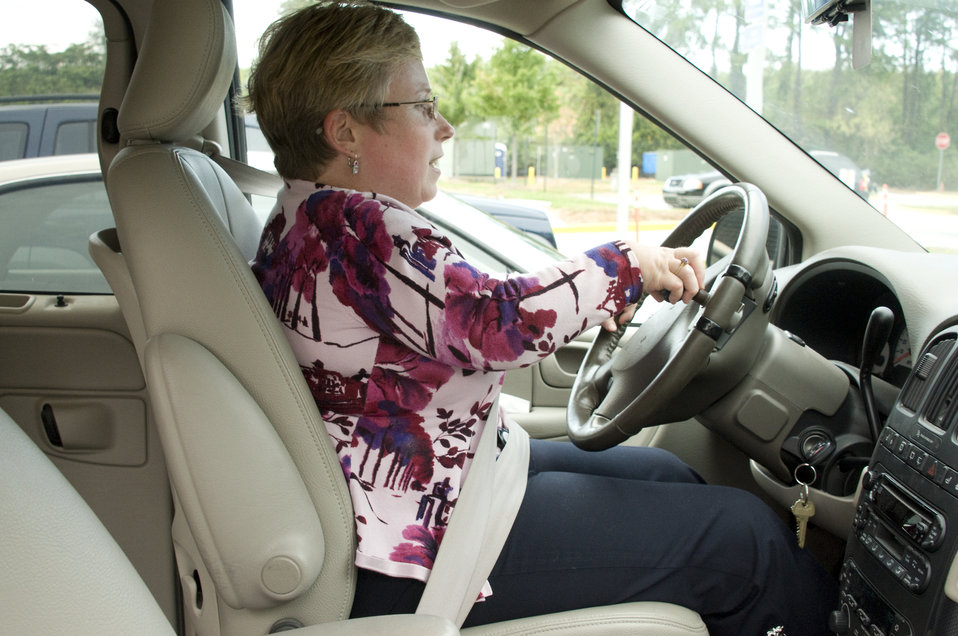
The woman pictured here, had just boarded her vehicle by way of an access ramp, while seated in her wheelchair, and had maneuvered herself into the driver's-side swivel seat. Due to her disability, the steering wheel was equipped with a hand control, which she held in her right hand, enabling her to operate the accelerator and braking system using her hand rather than her feet.